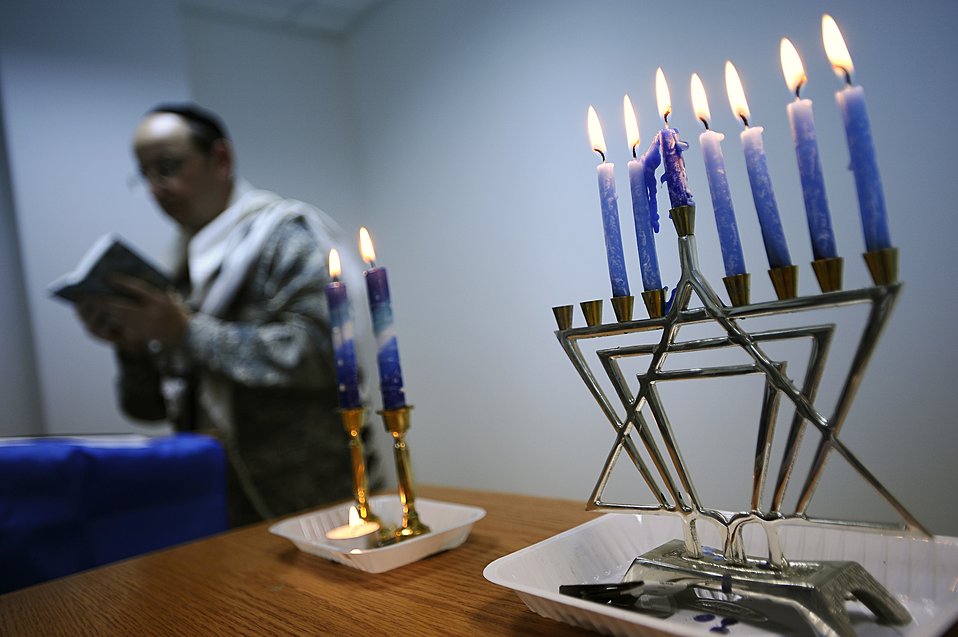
Festival of lights

Chaplain (Capt.) Andrew Cohen leads the Sabbath evening worship during the sixth day of Hanukkah at Joint Base Balad, Iraq. Chaplain Cohen is a rabbi with the 332nd Air Expeditionary Wing Chapel.